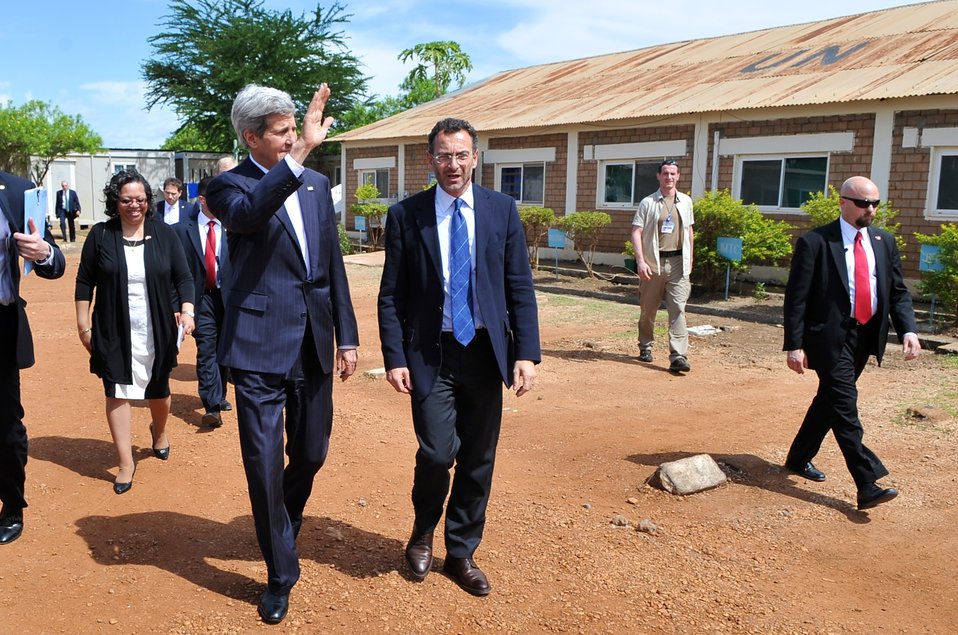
Secretary Kerry Waves As He Walks Through UNMISS Camp in Juba

U.S. Secretary of State John Kerry waves on May, 2, 2014, as he walks through a United Nations camp in Juba set up for South Sudanese residents displaced by their country’s civil war.